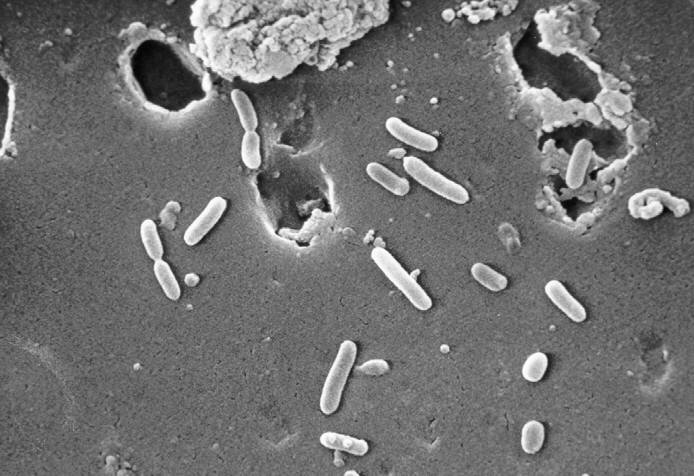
Scanning electron micrograph (SEM) of Pseudomonas aeruginosa bacteria.